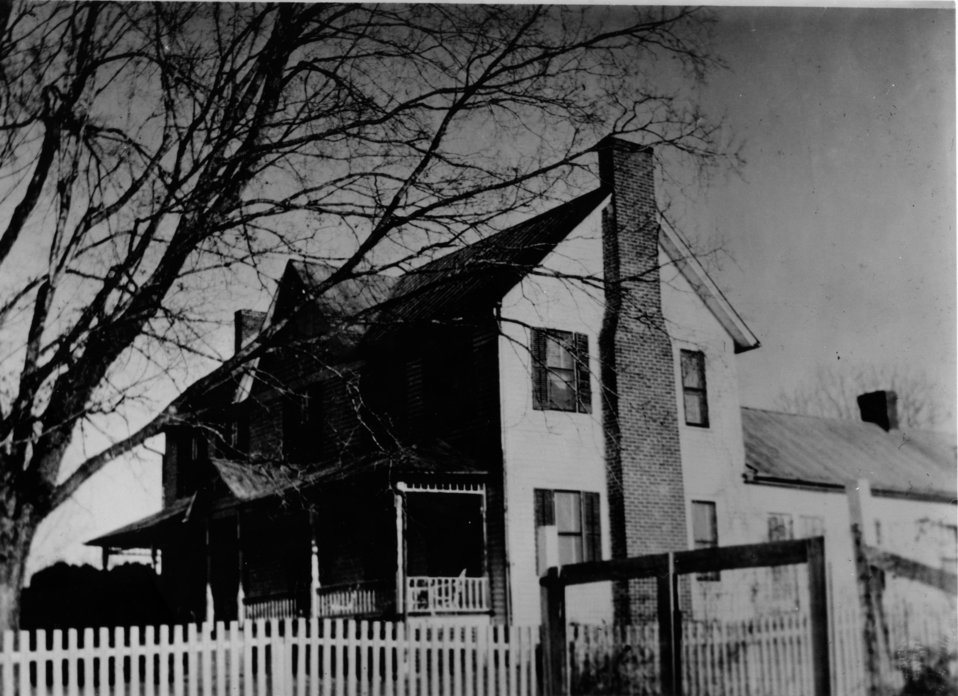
Early settlers at Oak Ridge